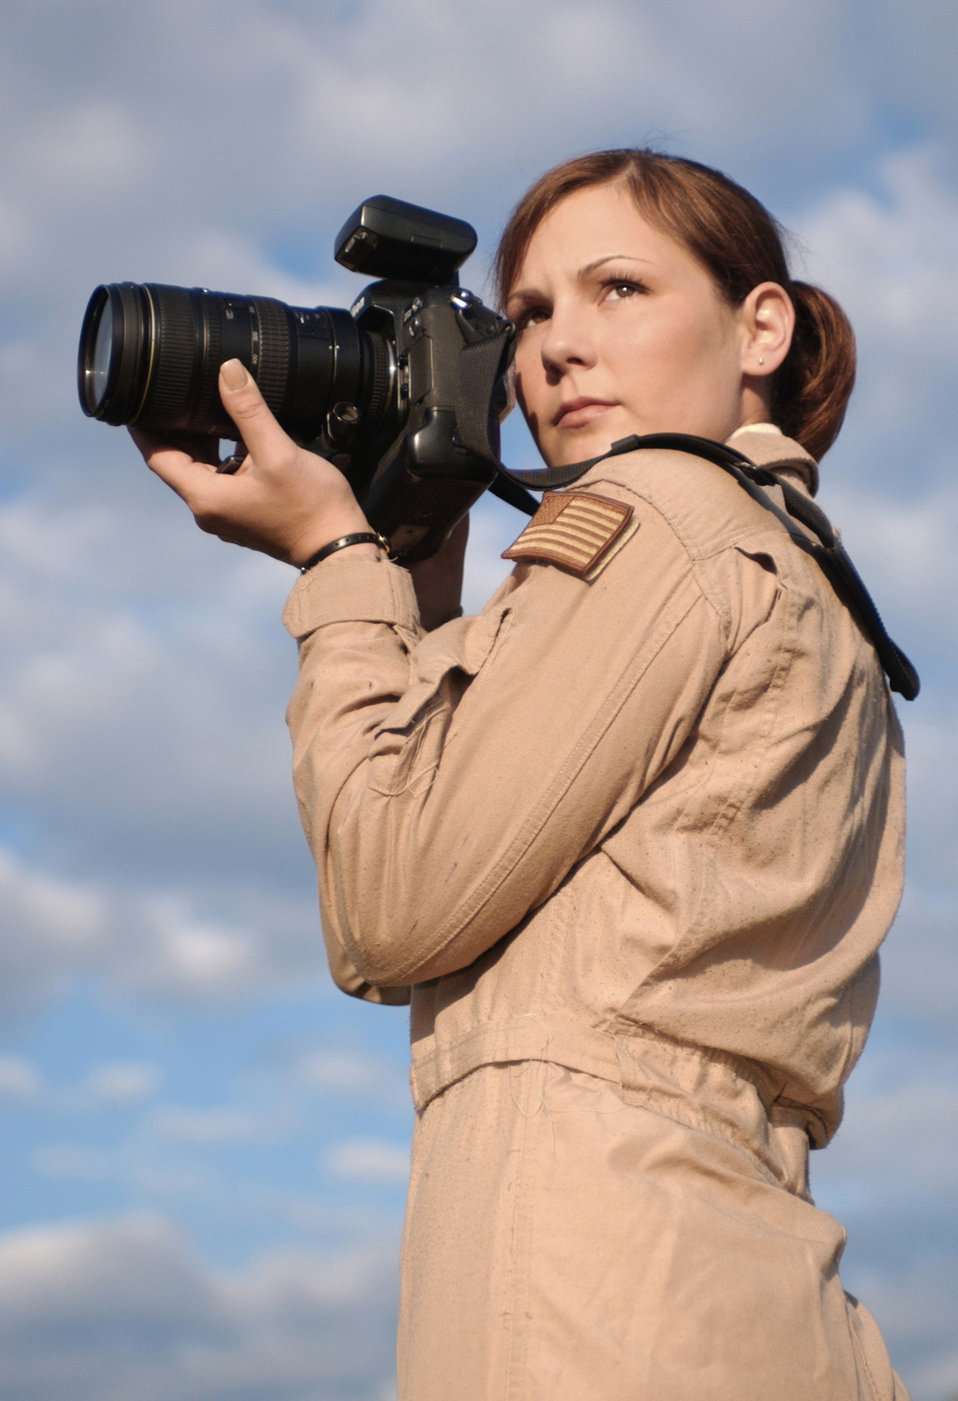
Stacy Pearsall

Now retired Staff Sgt. Stacy Pearsall, a combat photographer, serves a tour of duty in Iraq.